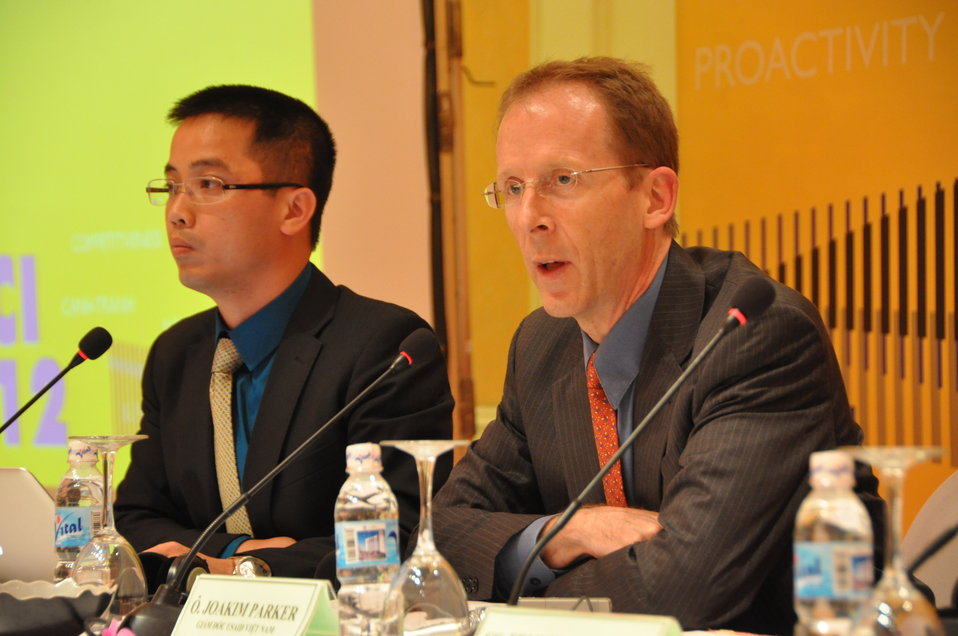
USAID Mission Director Joakim Parker talks to the press at the Provincial Competitiveness Index Launch, March 14, 2013al Competitiveness Index Launch, March 14, 2013

Hanoi, March 13, 2013